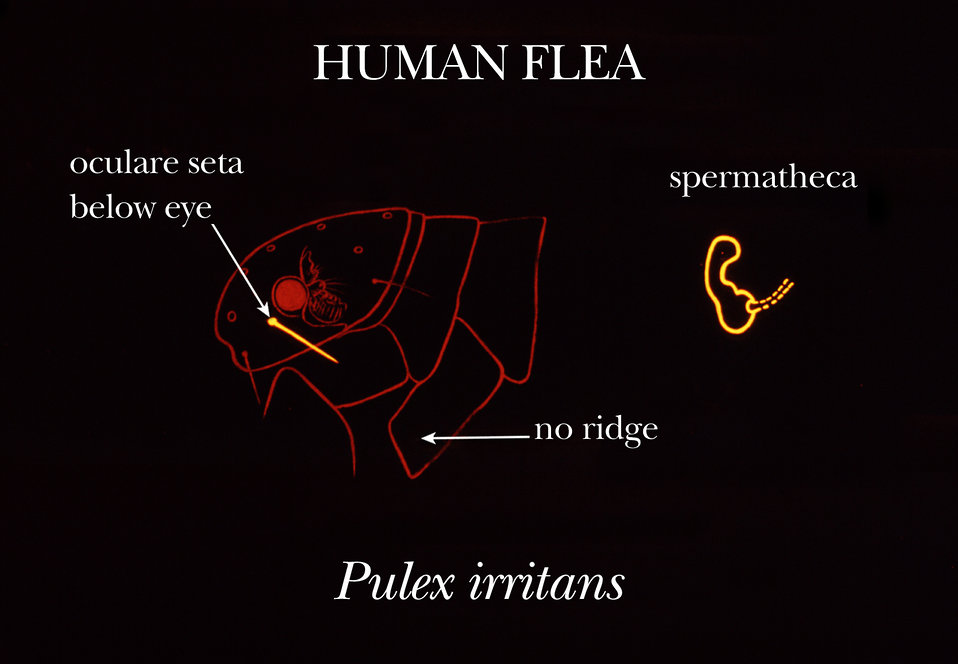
This illustration shows some of the identifying morphologic characteristics of the 'human flea', Pulex irritans.